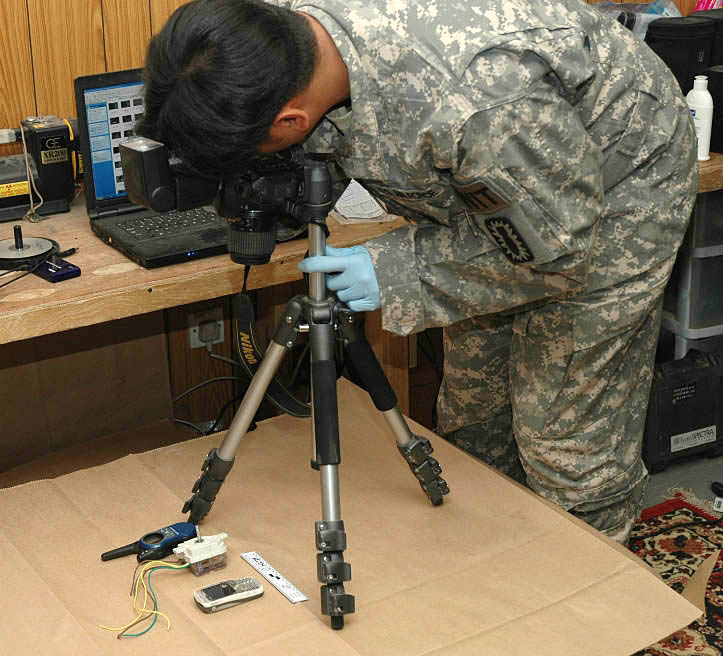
American servicemembers provide battlefield forensics

A member of the weapons intelligence team provides counter improvised explosive device intelligence through collection, analysis and tactical exploitation in support of Multinational Corps-Iraq in February in Iraq. By collecting evidence and staying ahead of the enemy, the WIT helps prepare U.S. and coalition forces prepare for future attacks.